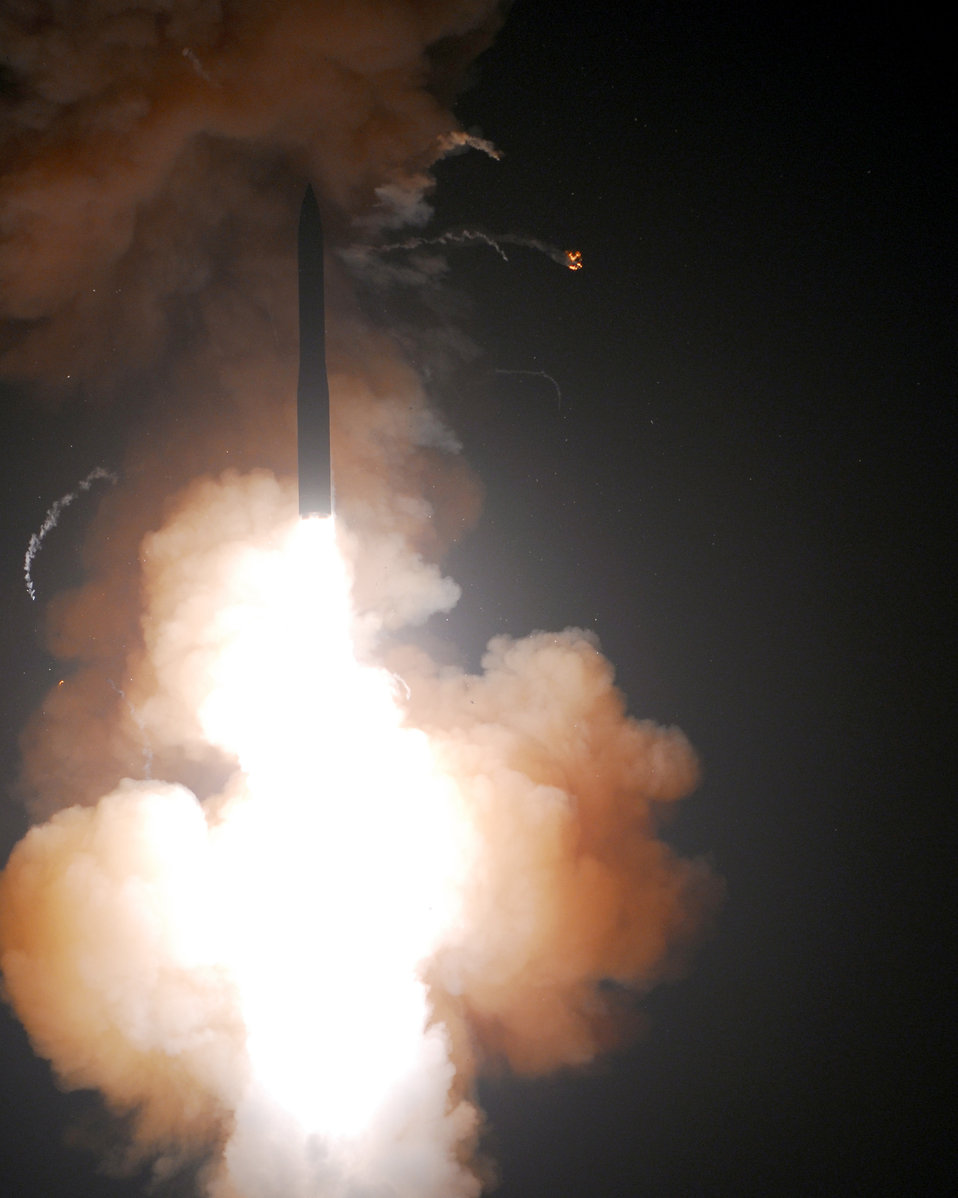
ICBM test launches showcase Global Strike capabilities

A Minuteman III intercontinental ballistic missile launches here June 16, 2010, from Vandenberg Air Force Base, Calif. The missile's single re-entry test vehicle traveled approximately 4,190 miles before hitting its pre-determined target near the Kwajalein Atoll in the Marshall Islands.